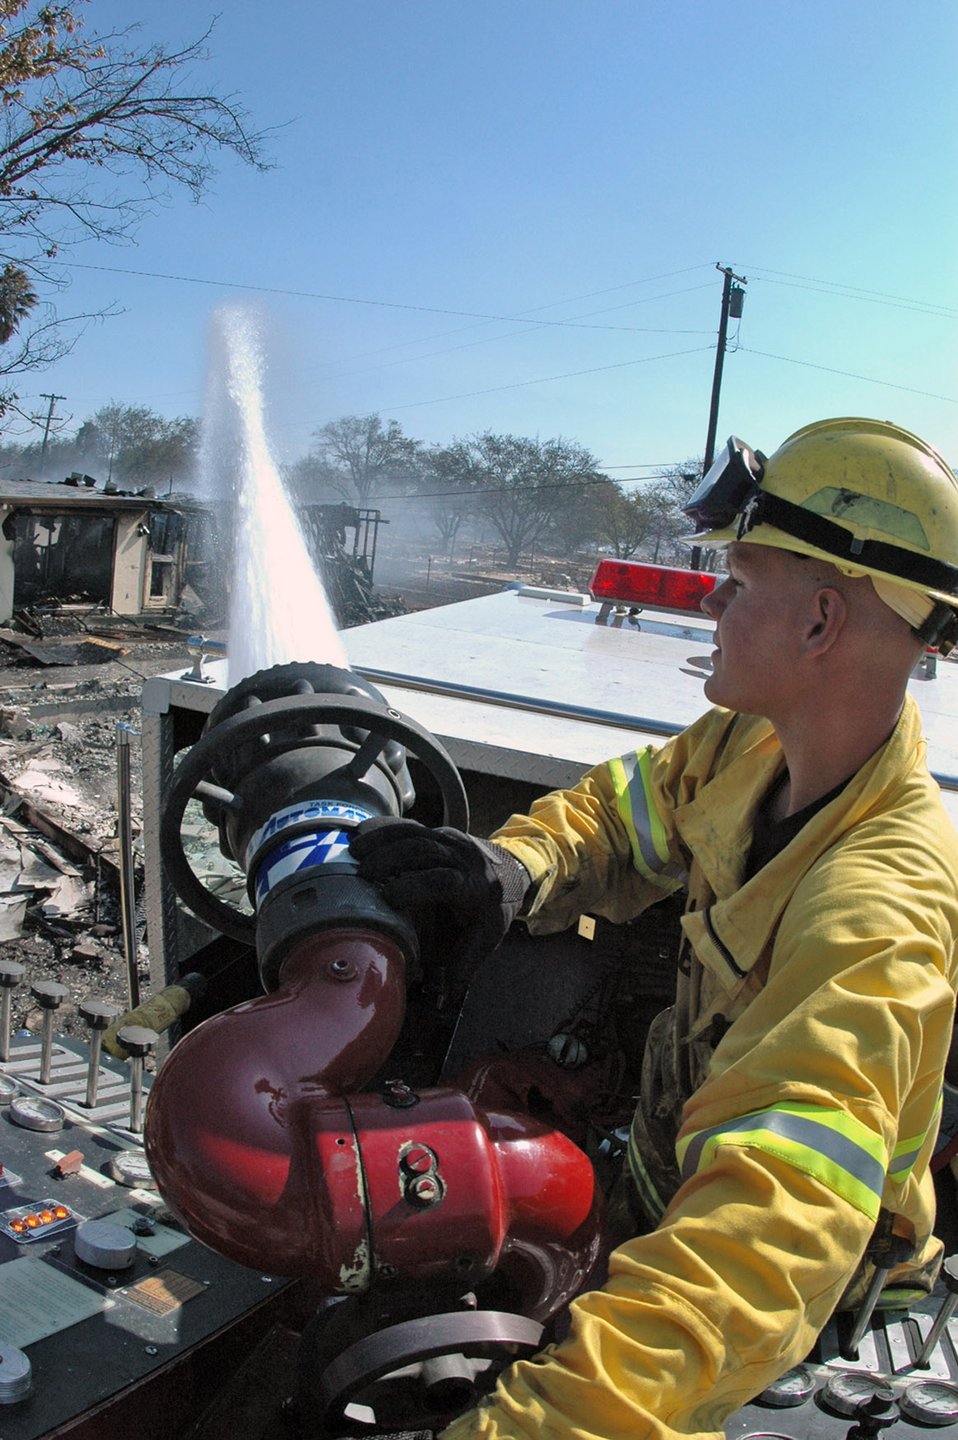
Travis, California firefighters extinguish blaze

Airman 1st Class Matthew Johnston uses a P-24 engine mass deck gun to knock down flames on an unoccupied houses destroyed by an eight-alarm fire Aug. 16 at Travis Air Force Base, Calif. Heavy winds caused the fire, which originated outside the base, to spread to a section of base housing that was scheduled to be demolished. Airman Johnston is a a Travis AFB firefighter.